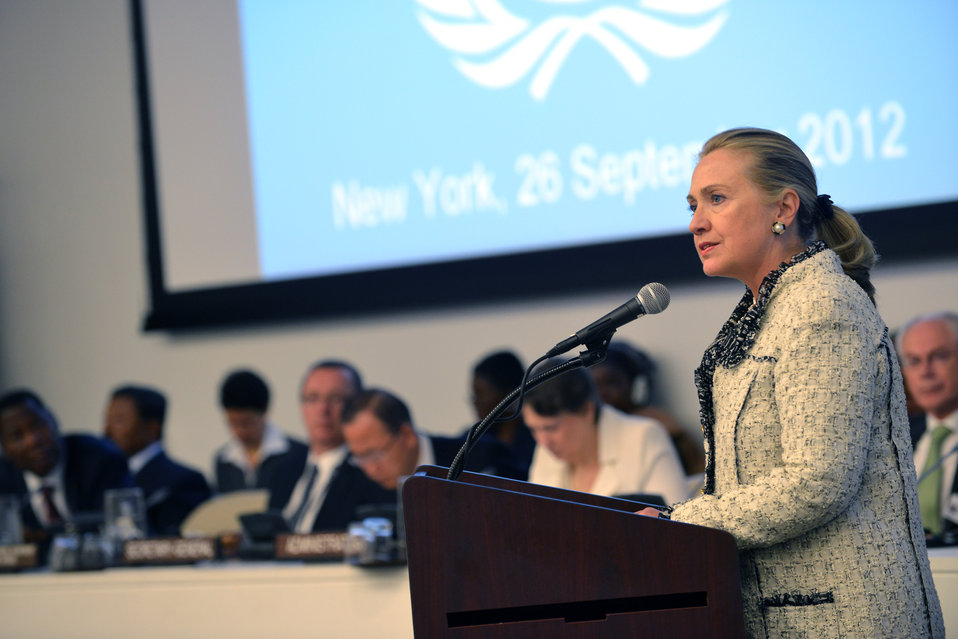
Secretary Clinton Delivers Remarks on the Sahel

U.S. Secretary of State Hillary Rodham Clinton delivers remarks on the Sahel at the United Nations in New York, New York on September 26, 2012.